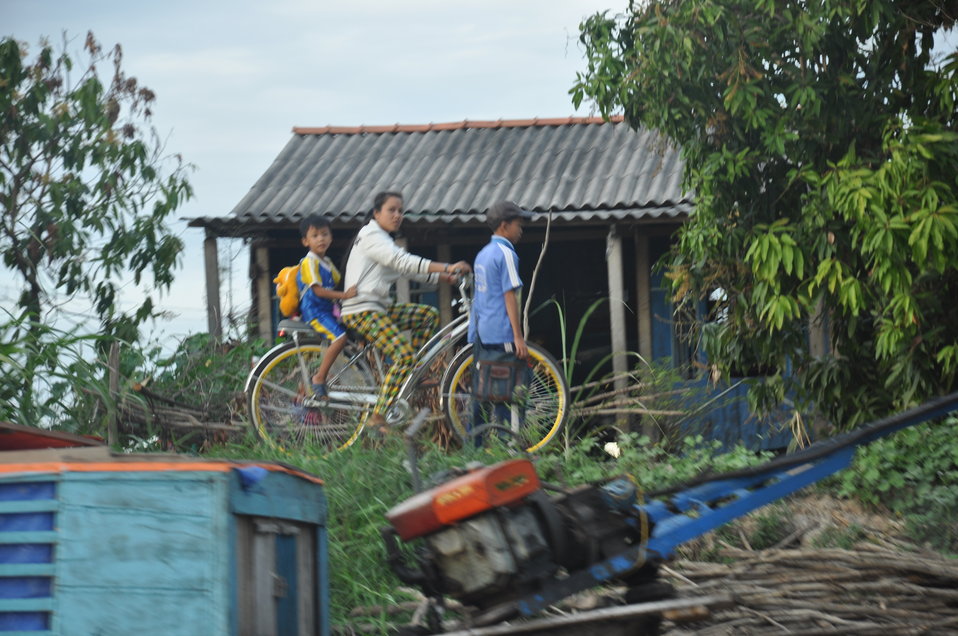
USAID supplies assistance to flood-stricken Long An Province, Tan Thanh District

USAID site visit to Long An Province to visit flood relief beneficiaries